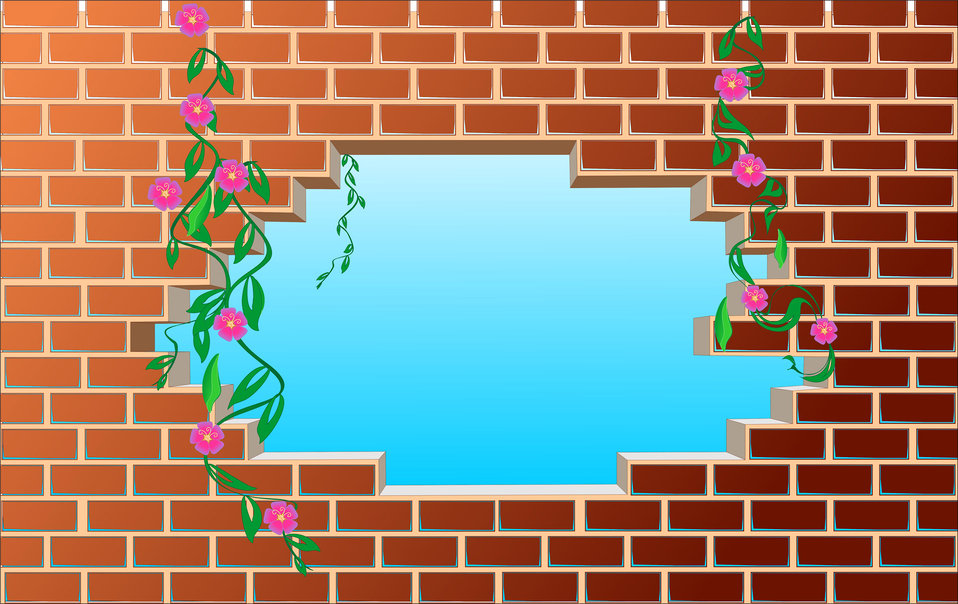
Brick wall

Vector illustration of a broken brick wall with plants and flowers entwined.